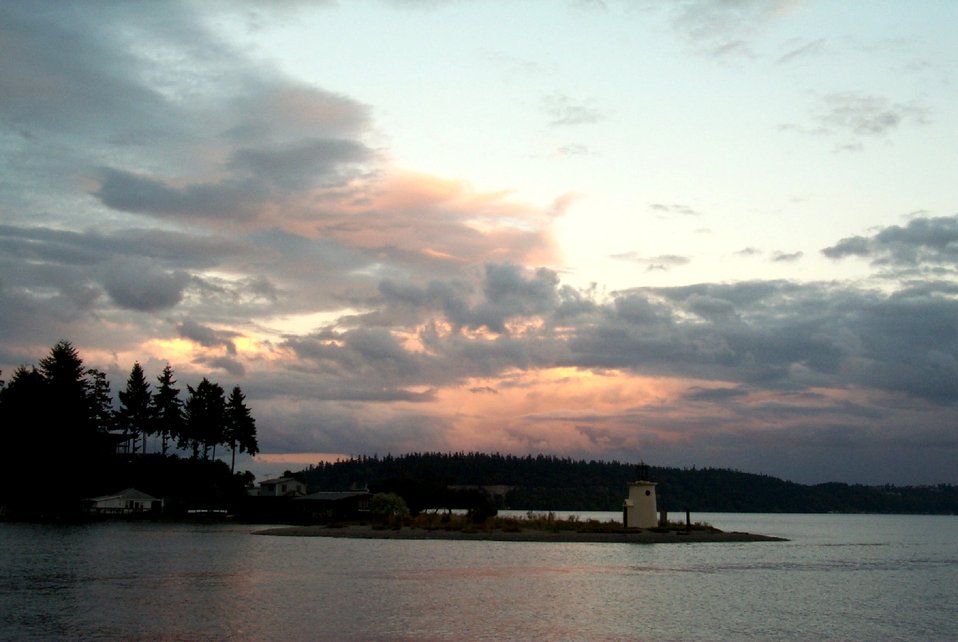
An evening view to the east after a steady rain. The light area is an optical effect as the sun was setting to the west behind the photographer.